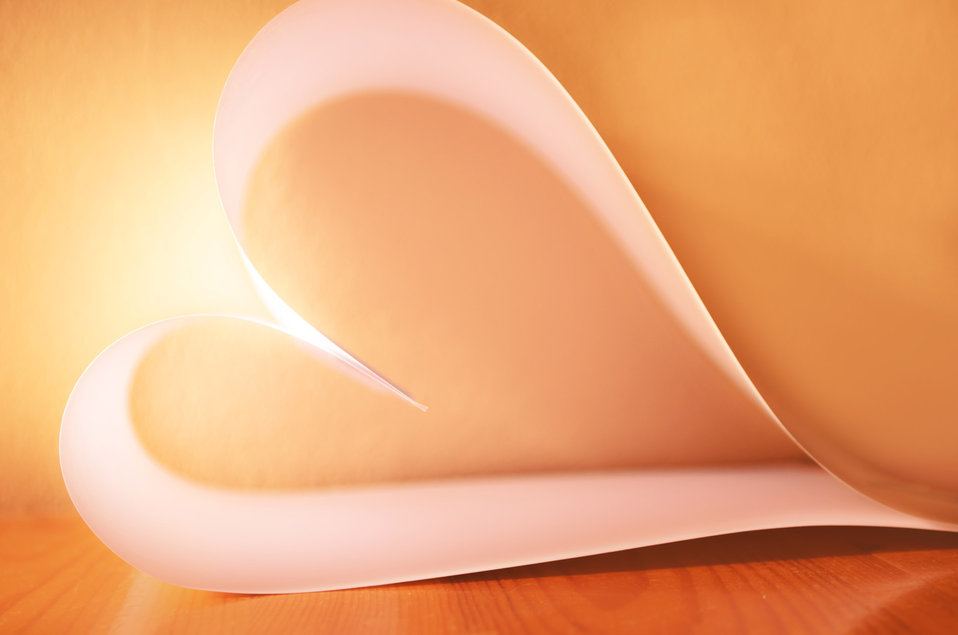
Paper heart - background.